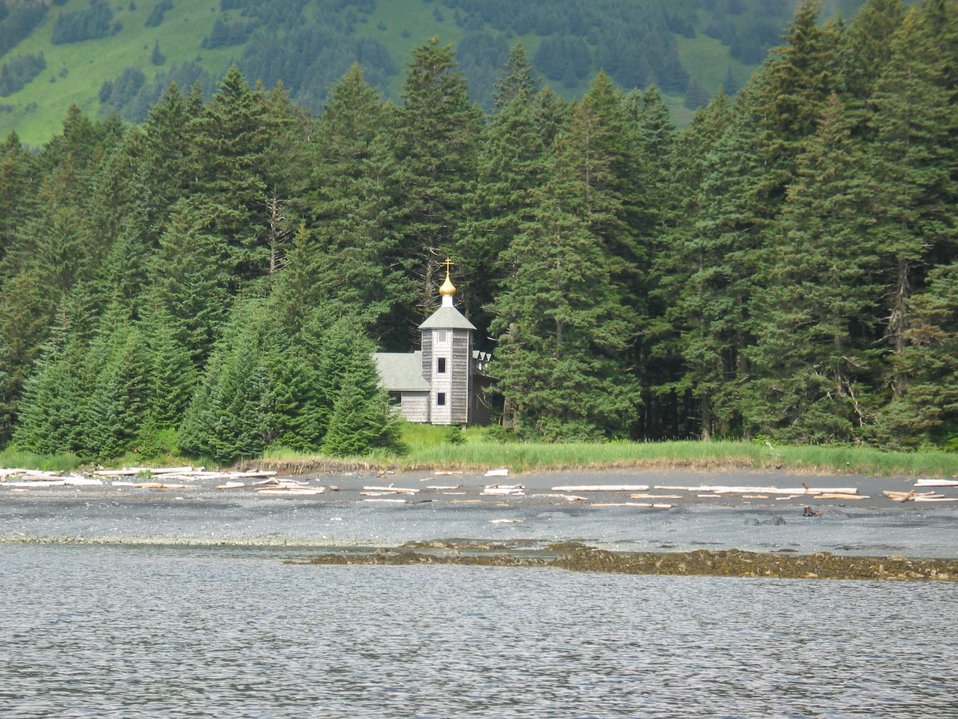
Russian Orthodox Church shrine ? at Monk's Lagoon